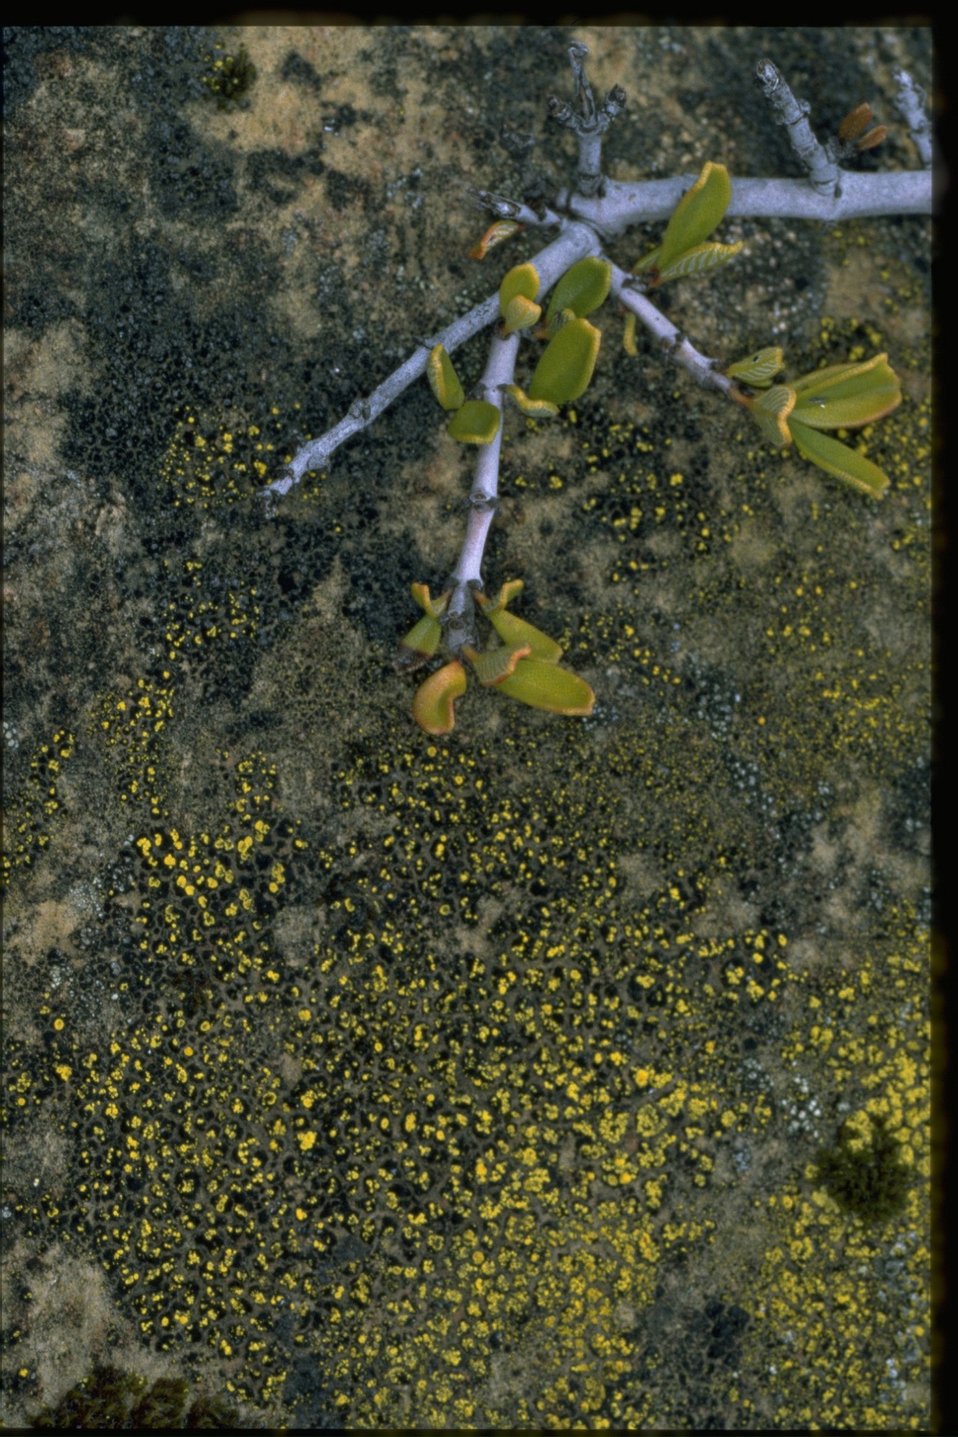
Farshot of Ceanothus (pumila) and lichen.